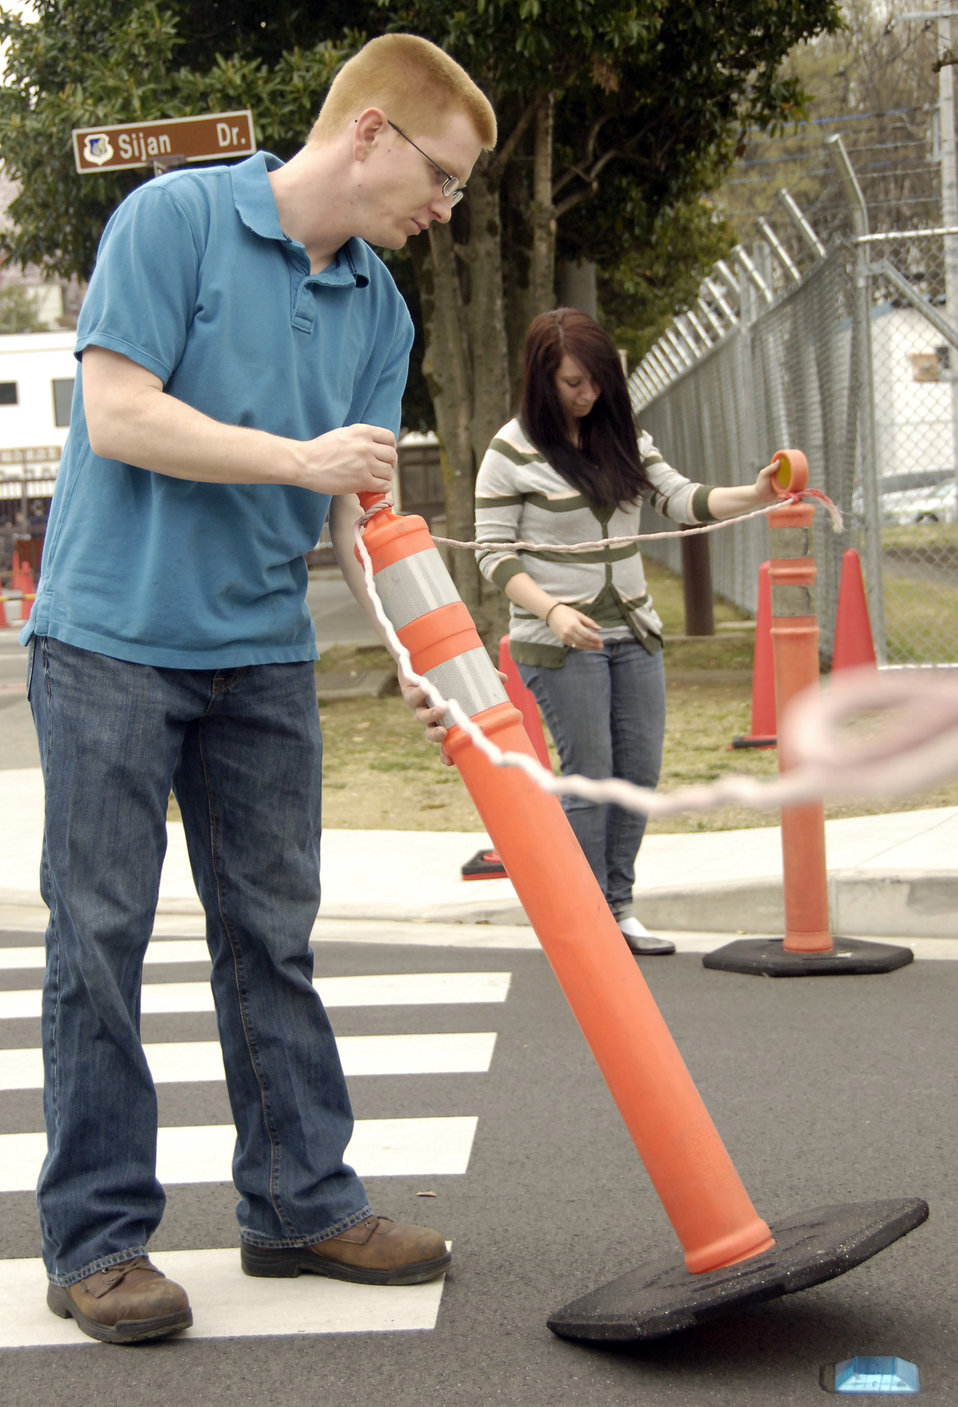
Cherry Blossom Festival at Yokota

Senior Airman Alexander Barnes and Airman 1st Class Daniella Koza set up guides prior to the Yokota Cherry Blossom Open House April 10, 2011. Base officials opened the gates to the public, allowing the local Japanese community to come on to Yokota to see the trees in full bloom. Airmen Barnes is from Det. 2, Air Postal Squadron; Airman Koza is from the 374th Medical Support Squadron.